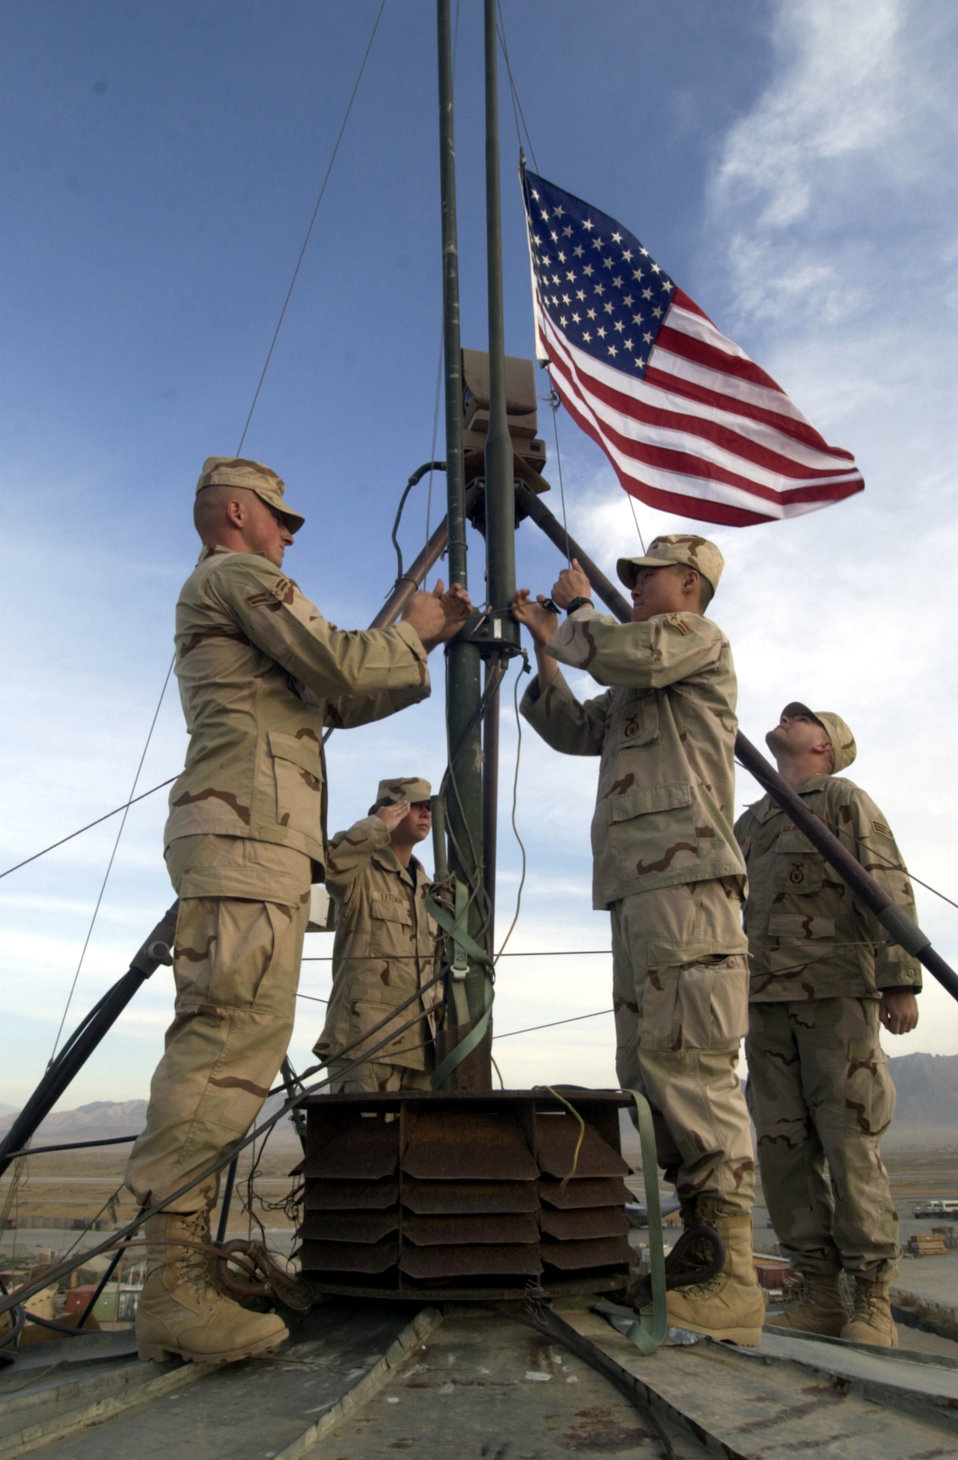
Honoring America's veterans

BAGRAM AIR BASE, Afghanistan -- (Left to right) Airman 1st Class William Jannisch, Staff Sgt. Cassie Letendre, Airman 1st Class Jason Ventura and Senior Airman James Butler conduct a retreat ceremony honoring American veterans. The ceremony was on the roof of a Soviet-built aircraft control tower here Nov. 11. The airmen are assigned to the 455th Expeditionary Security Forces Squadron. Jannisch and Letendre are deployed from Holloman Air Force Base, N.M.; Ventura is deployed from Cannon AFB, N.M.; and Butler is deployed from Minot AFB, N.D.